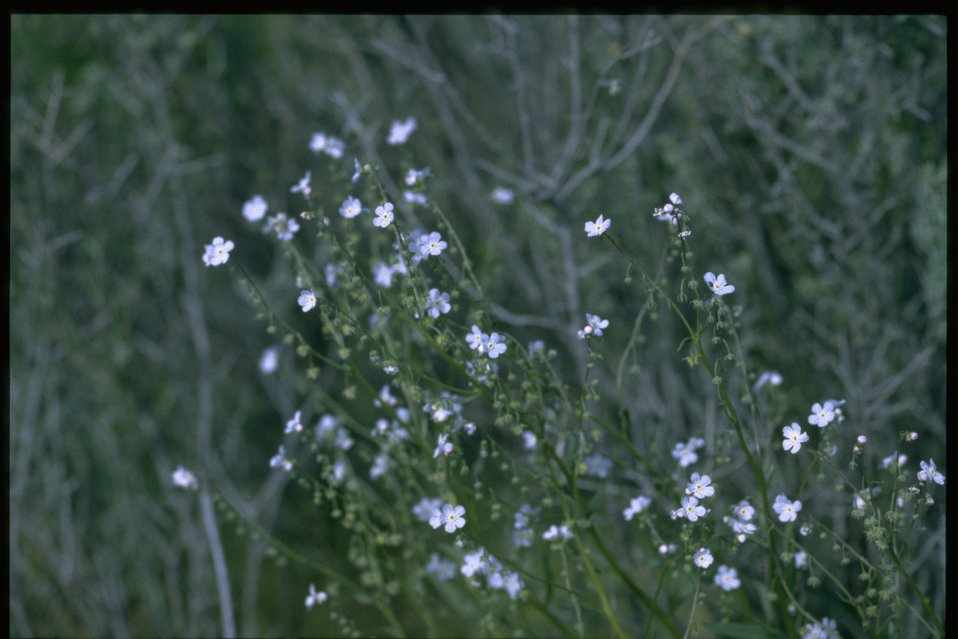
Farshot of Many-flowered Stickseed; Wild Forget-me-not wildflowers (Hackelia floribunda).